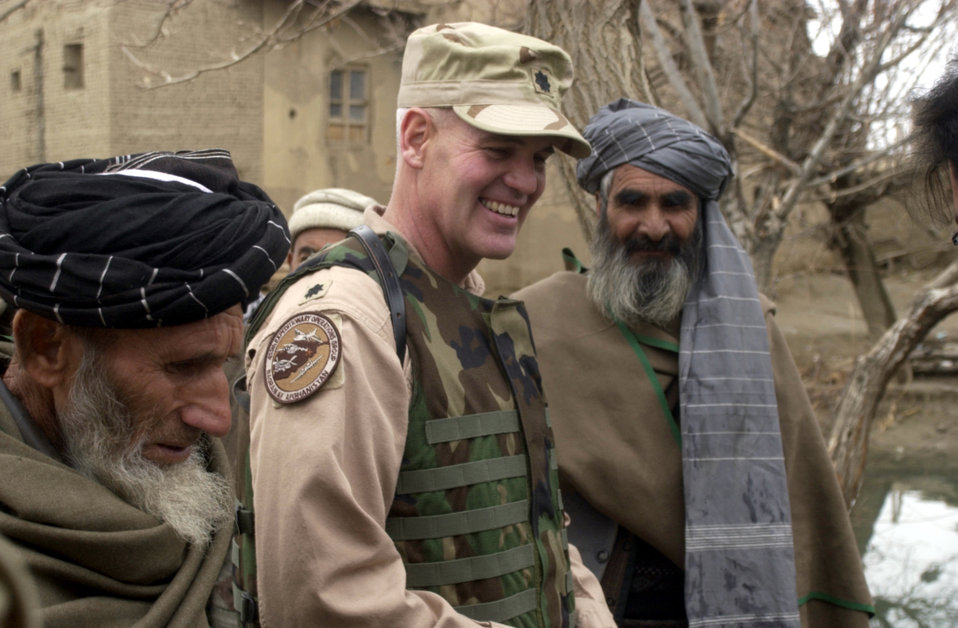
Adopt a Village

JANGADAM VILLAGE, Afghanistan -- Lt. Col. John Bernier meets with village elders here during the 455th Expeditionary Operations Group's delivery of humanitarian supplies Dec. 31. Bernier is the 455th Air Expeditionary Wing flight safety officer.